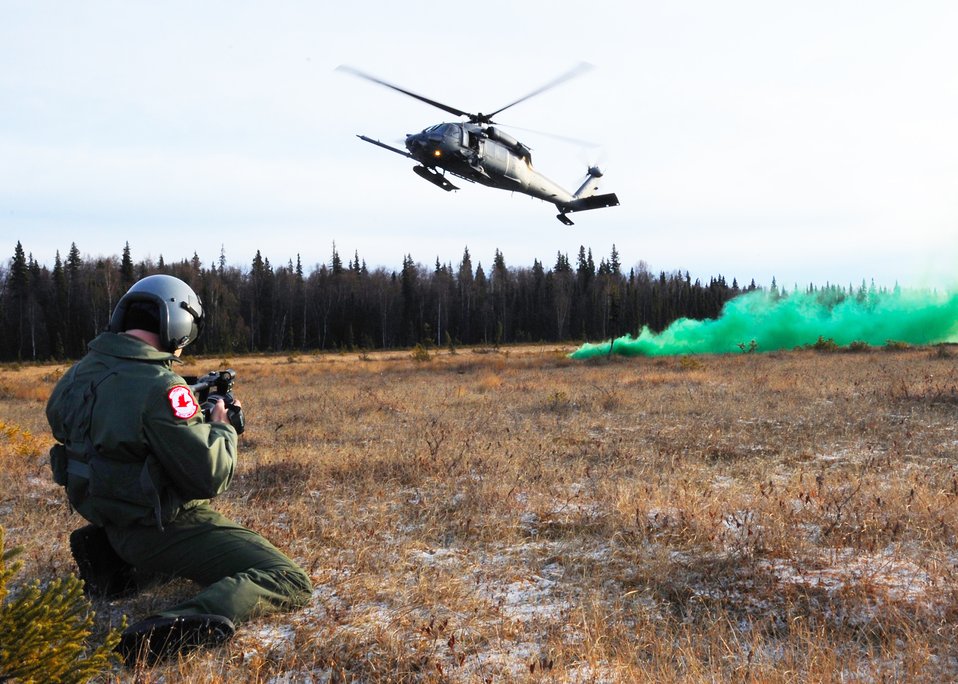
Lights, camera, ACTION!

Staff Sgt. Mark Leahy takes video footage of a HH-60G Pave Hawk performing training missions near Elmendorf Air Force Base, Alaska, Nov. 4, 2009. The Kulis Air National Guard Base rescue squadrons conduct training sorties five days a week around the Alaska airspace. Sergeant Leahy is a videographer with the 3rd Wing Public Affairs office.